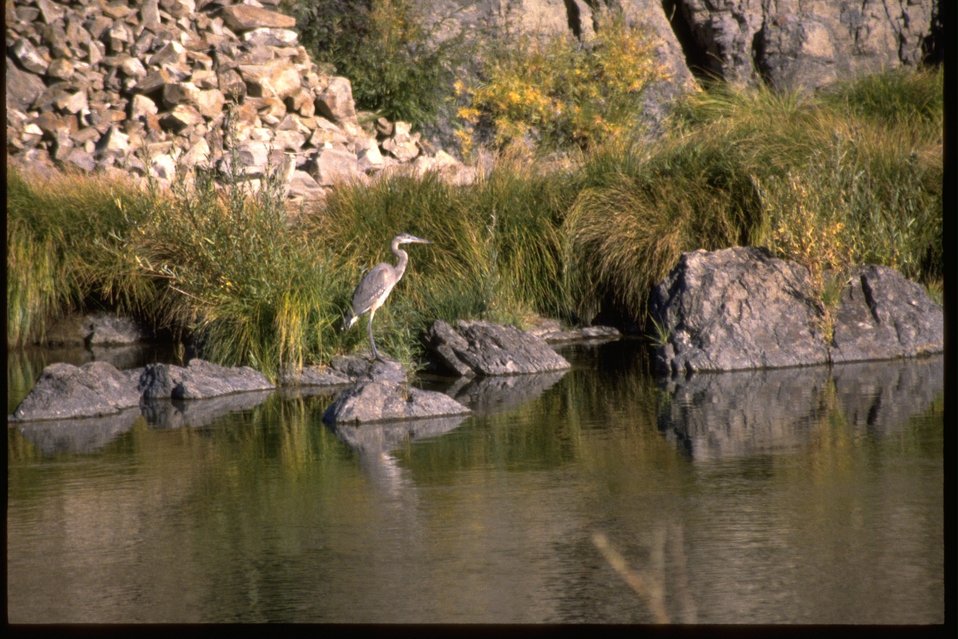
Heron on rock in John Day River with vegetation in the background.